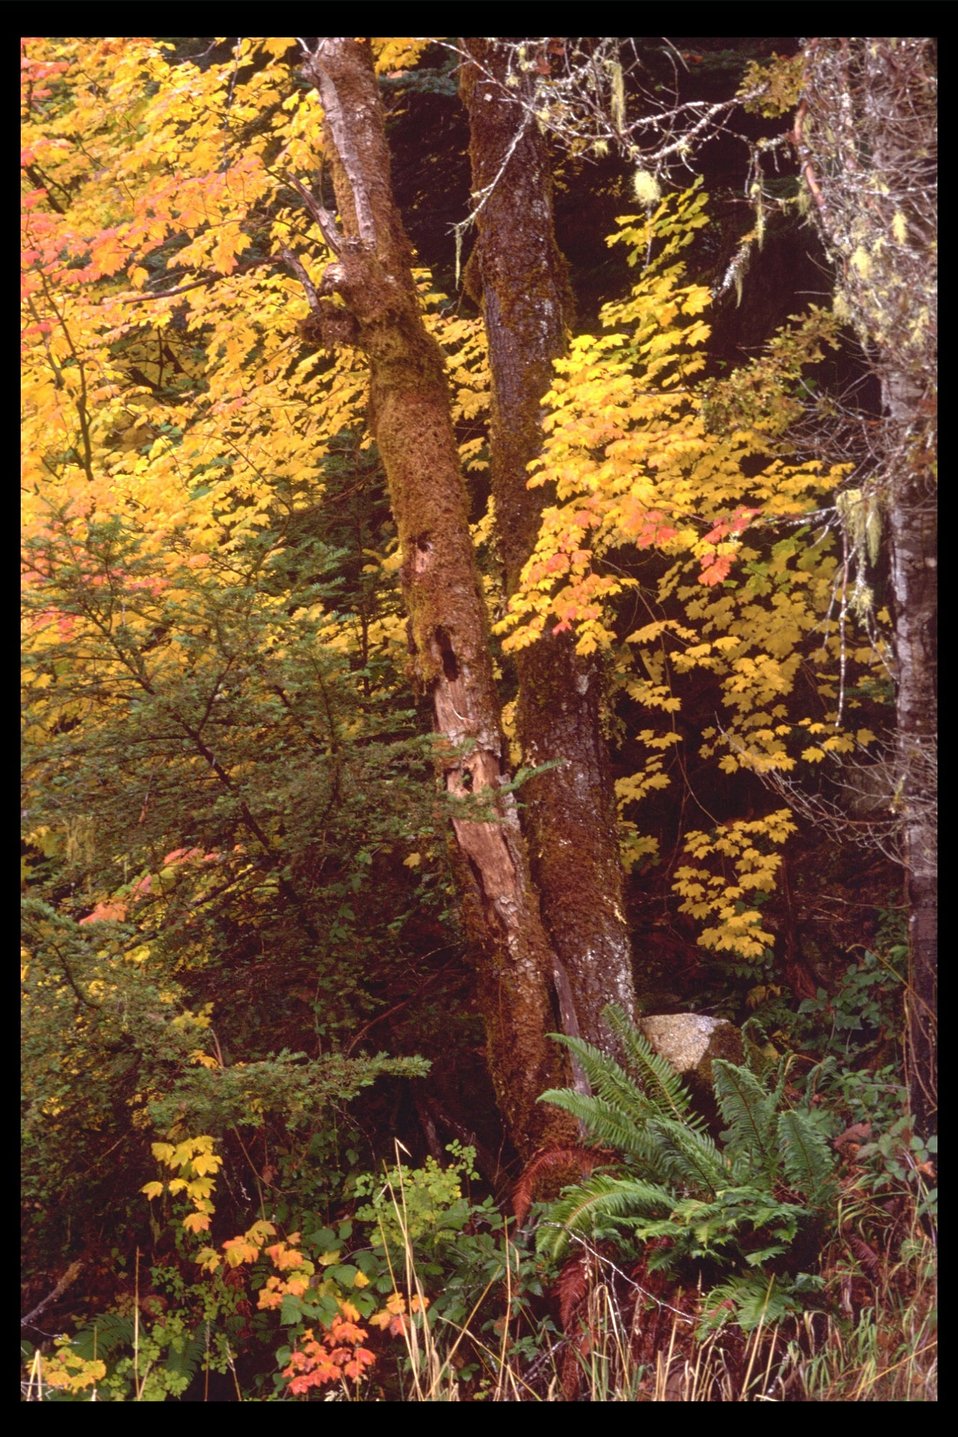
Fall Colors along Salt Creek just off West Evans Creek.